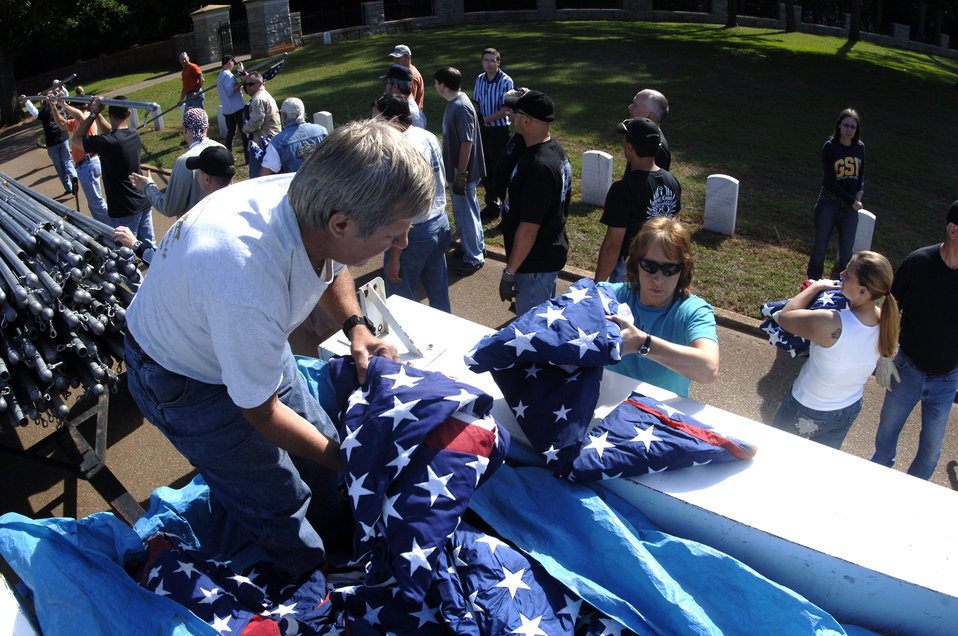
Memorial Day preparations at Andersonville Cemetery

A volunteer at Andersonville National Cemetery near Americus, Ga., hands out U.S. flags to some 70 motorcycle enthusiasts from Robins Air Force Base, Ga., on Friday, May 19, 2006. The group rode as a convoy on the 50-mile trip to the cemetery to set up the flags for Memorial Day.